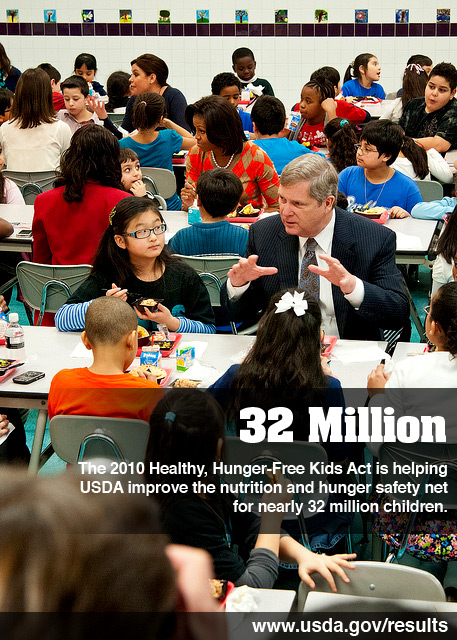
Blog-Nutrition1

Agriculture Secretary Tom Vilsack joined First Lady Michelle Obama and celebrity cook Rachel Ray at Parklawn Elementary School in Alexandria, Virginia, on Wednesday, January 25, 2012 to speak with faculty and parents about the United States Department of Agriculture’s new and improved nutrition standards for school lunches. An important accomplishment of the Healthy, Hunger-Free Kids Act that President Obama signed into law last year, USDA is making the first major changes in school meals in over 15 years. The new standards encourage fruits and vegetables every day of the week, increasing offerings of whole grain-rich foods, offering only fat-free or low-fat milk and making sure kids are getting proper portion sizes.